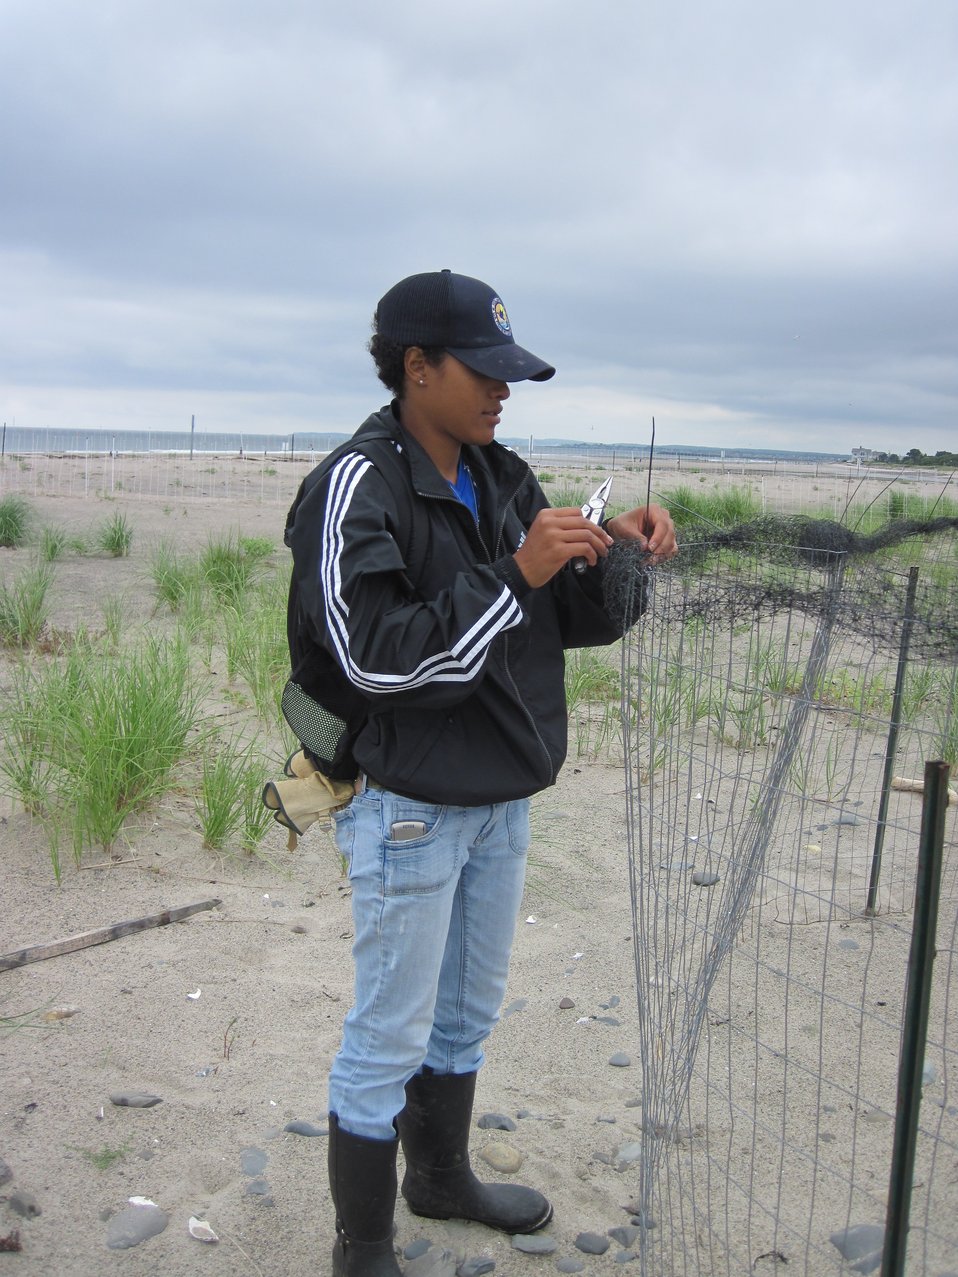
Protecting Piping Plovers

A CDIP intern helps to construct a barrier to help protect piping plover nests from predators at Rachel Carson National Wildlife Refuge.